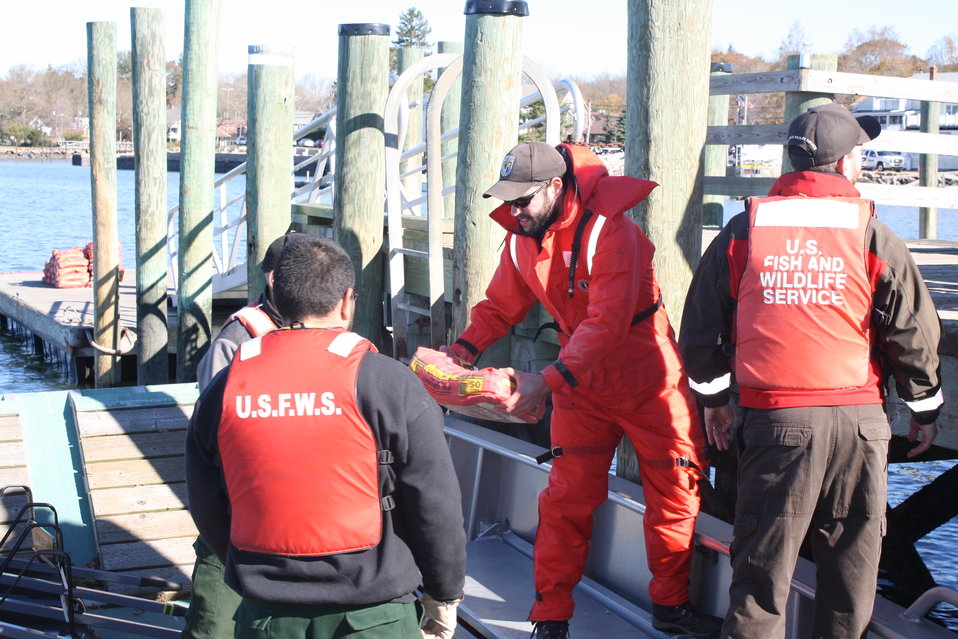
Stewart B. McKinney National Wildlife Refuge (CT)

Refuge staff and crews load cement on a boat before heading out to Outer Island to begin repairs after Hurricane Sandy.